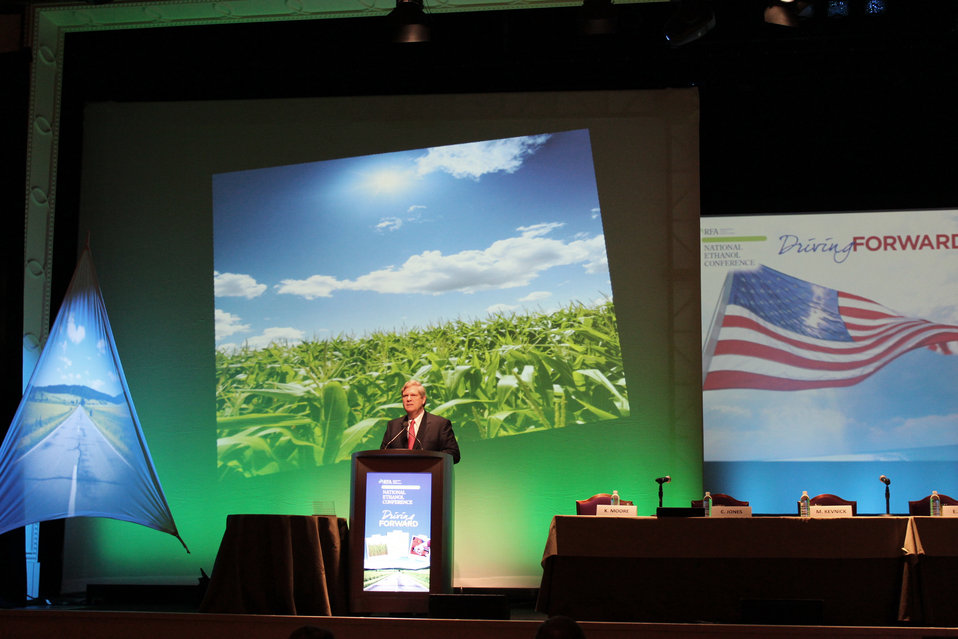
Agriculture Secretary Tom Vilsack speaks at the Renewable Fuels Association’s 18th Annual Ethanol Conference in Las Vegas, NV on Feb. 7, 2013. Secretary Vilsack discussed the unlimited opportunity for America to produce more homegrown energy through the development and innovation of advanced biofuels and the significant contributions biofuels and other biobased products have made to America’s economic and energy security, as well as the importance of supporting the industry through research, investment and increased collaboration.